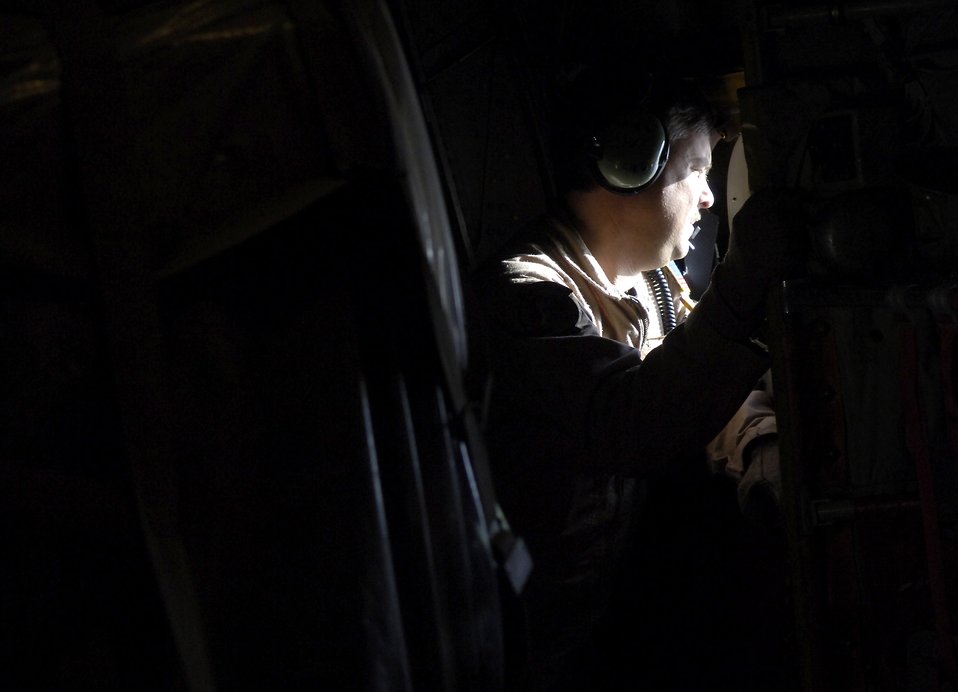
Hercules lifts off

Tech. Sgt. Ken Bishop checks the left side of the aircraft during descent into Forward Operating Base Salerno, Afghanistan, on Saturday, June 10. Sergeant Bishop is a loadmaster for the 774th Expeditionary Airlift Squadron. The squadron is the only U.S. C-130 squadron in Afghanistan, and flies approximately five missions a day providing airlift and airdrops to troops in theater.